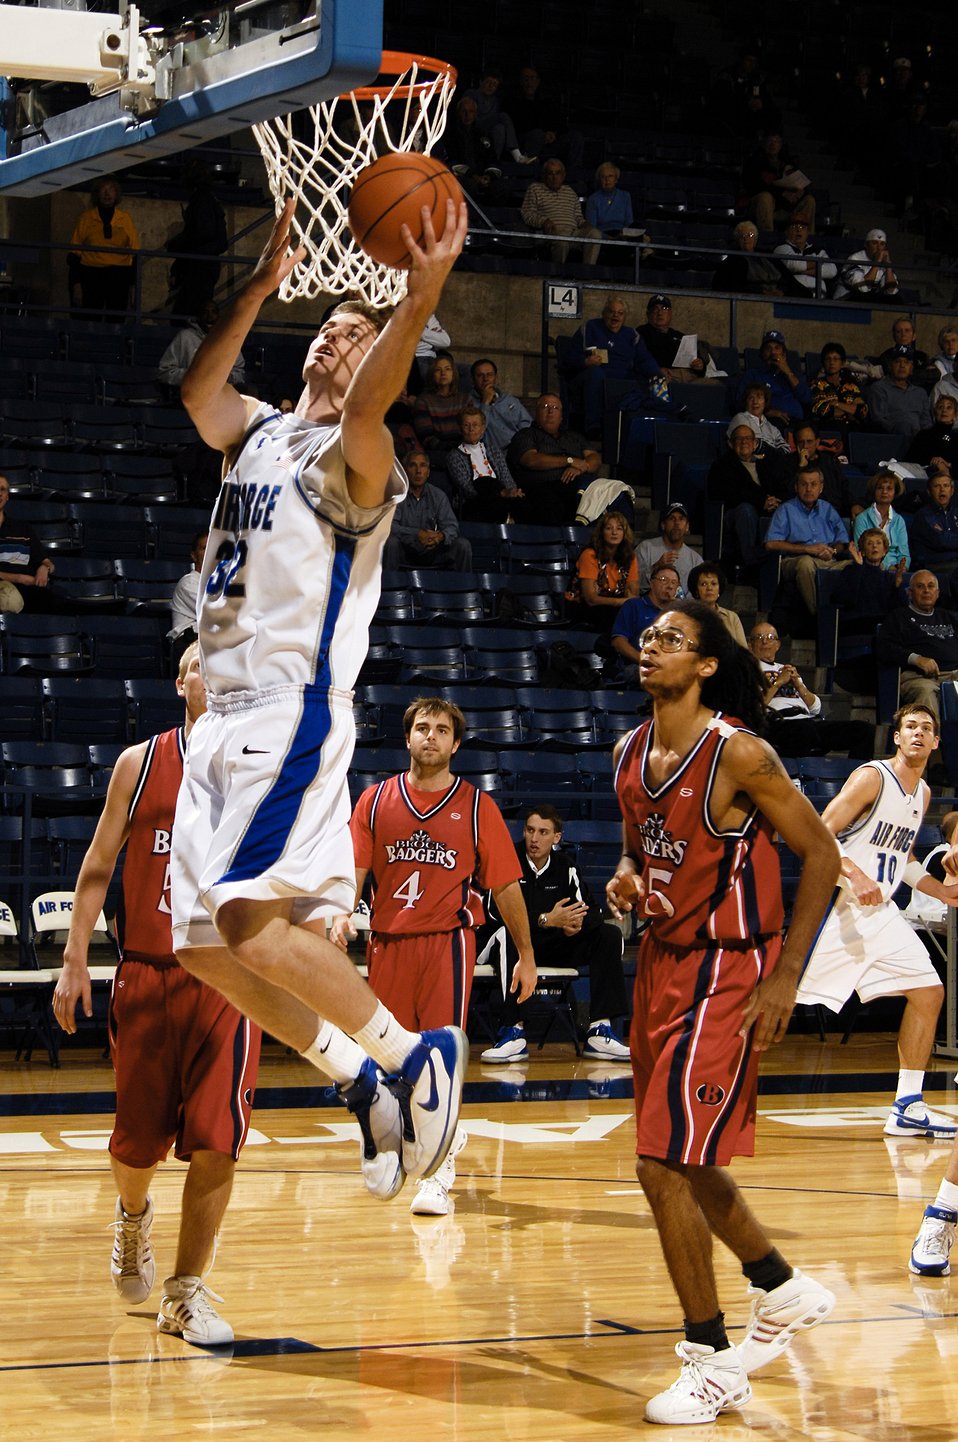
Members of the Blue Spirit Squad cheer during the Air Force vs. Brock University exhibition basketball game at Clune Arena. Air Force was defeated 66-63 on a last second 3-pointer by Rohan Steen of the Badgers.The Falcons open the 2007-08 regular season

Senior Eric Kenzik goes up for the layup during the Brock University exhibition basketball game at the academy's Clune Arena. Kenziks 11 points were not enough as Air Force was defeated 66-63. The Falcons open the 2007-08 regular season on Nov. 9 in the Air Force Classic at Clune Arena.